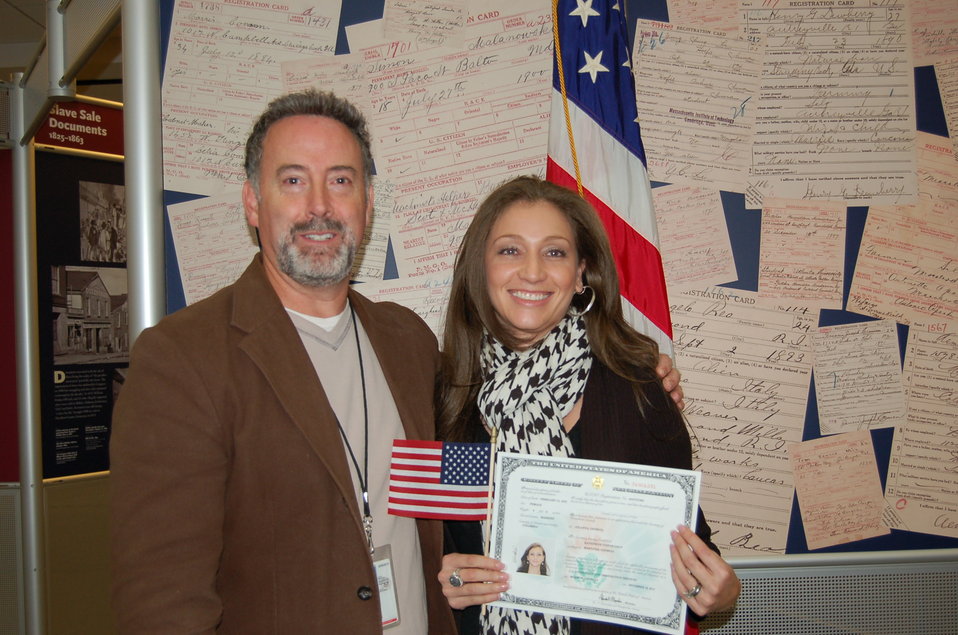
New Citizens